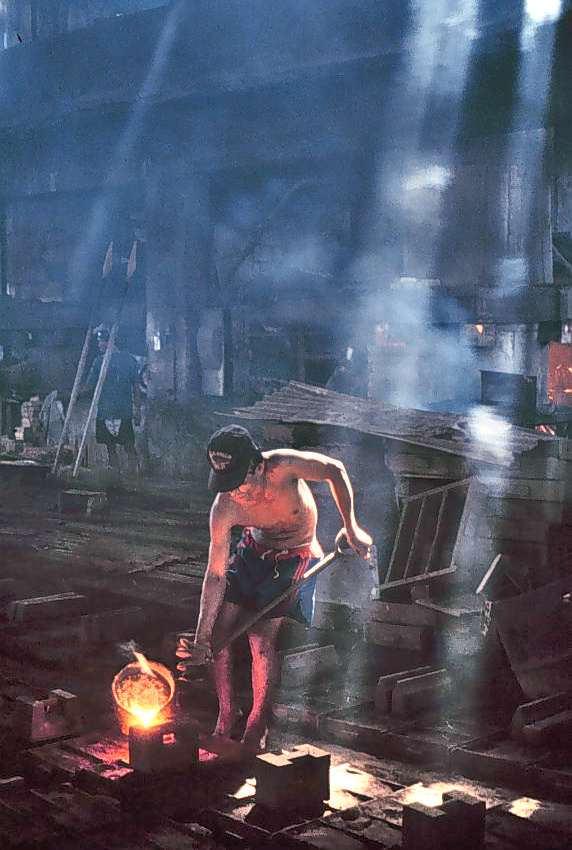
This photograph shows a foundry worker who took part in a 1998 hands-on industrial hygiene sampling course in Manila, Philippines.